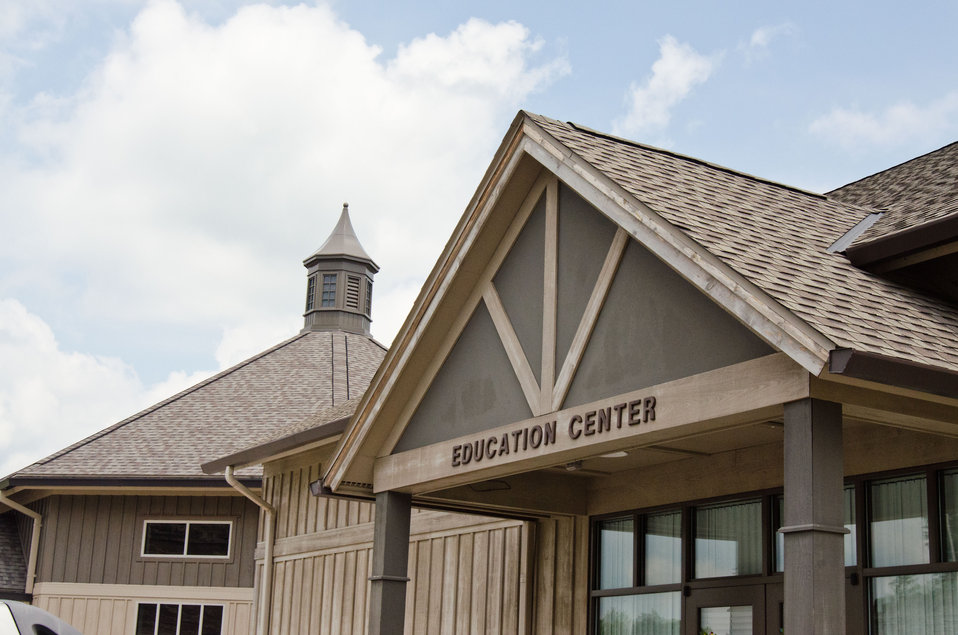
Education Center entrance to the Bath County Agricultural Education and Marketing Center, Owingsville, KY, on Friday, July 15, 2011. The Center was the recipient of a $400,000 Rural Business Enterprise Grant. It has given farmers and producers from Bath and surrounding counties the opportunity to manufacture and market their locally grown and locally produced value-added and “Kentucky Proud” branded products, including but not limited to, fresh produce, artisan crafts and specialty food products. The Center is open year-round and allow residents to sell products in four different retail categories, including Kentucky products, regional crafts, “green” groceries and bakery/deli. Several producers expressed their gratitude for Rural Development’s assistance in making the center a reality. The project was made possible through American Recovery and Reinvestment Act of 2009 funding enacted by the 111th United States Congress in February 2009 and signed into law on February 17, 2009, by President Barack Obama.